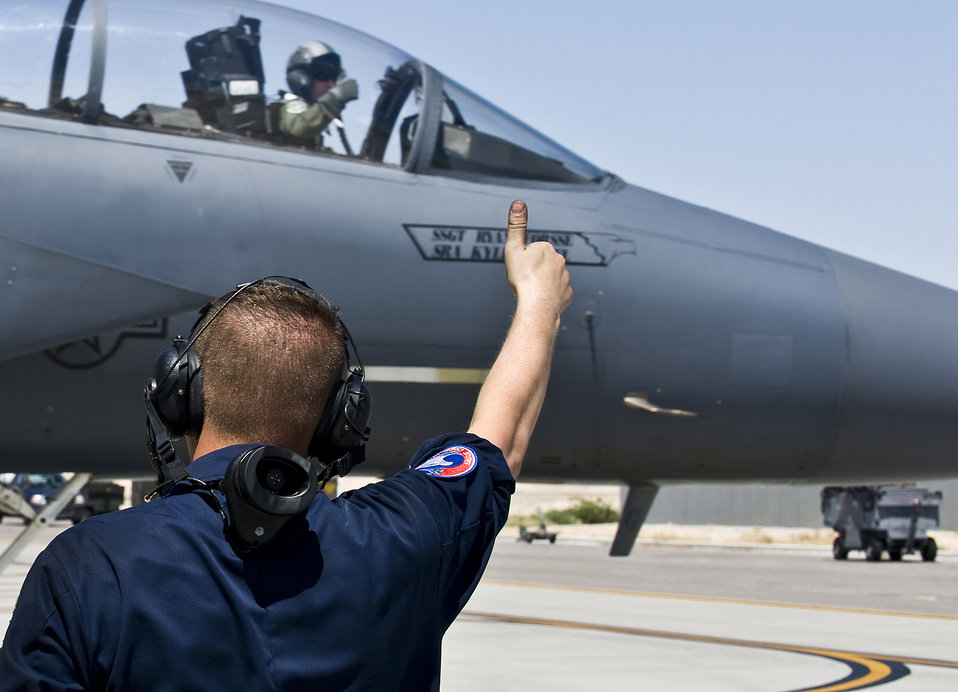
Good to go!

A crew chief gives the go-ahead to an F-15E Strike Eagle pilot taxiing toward the runway before a training mission June 16, 2011, during Green Flag-West at Nellis Air Force Base, Nev.